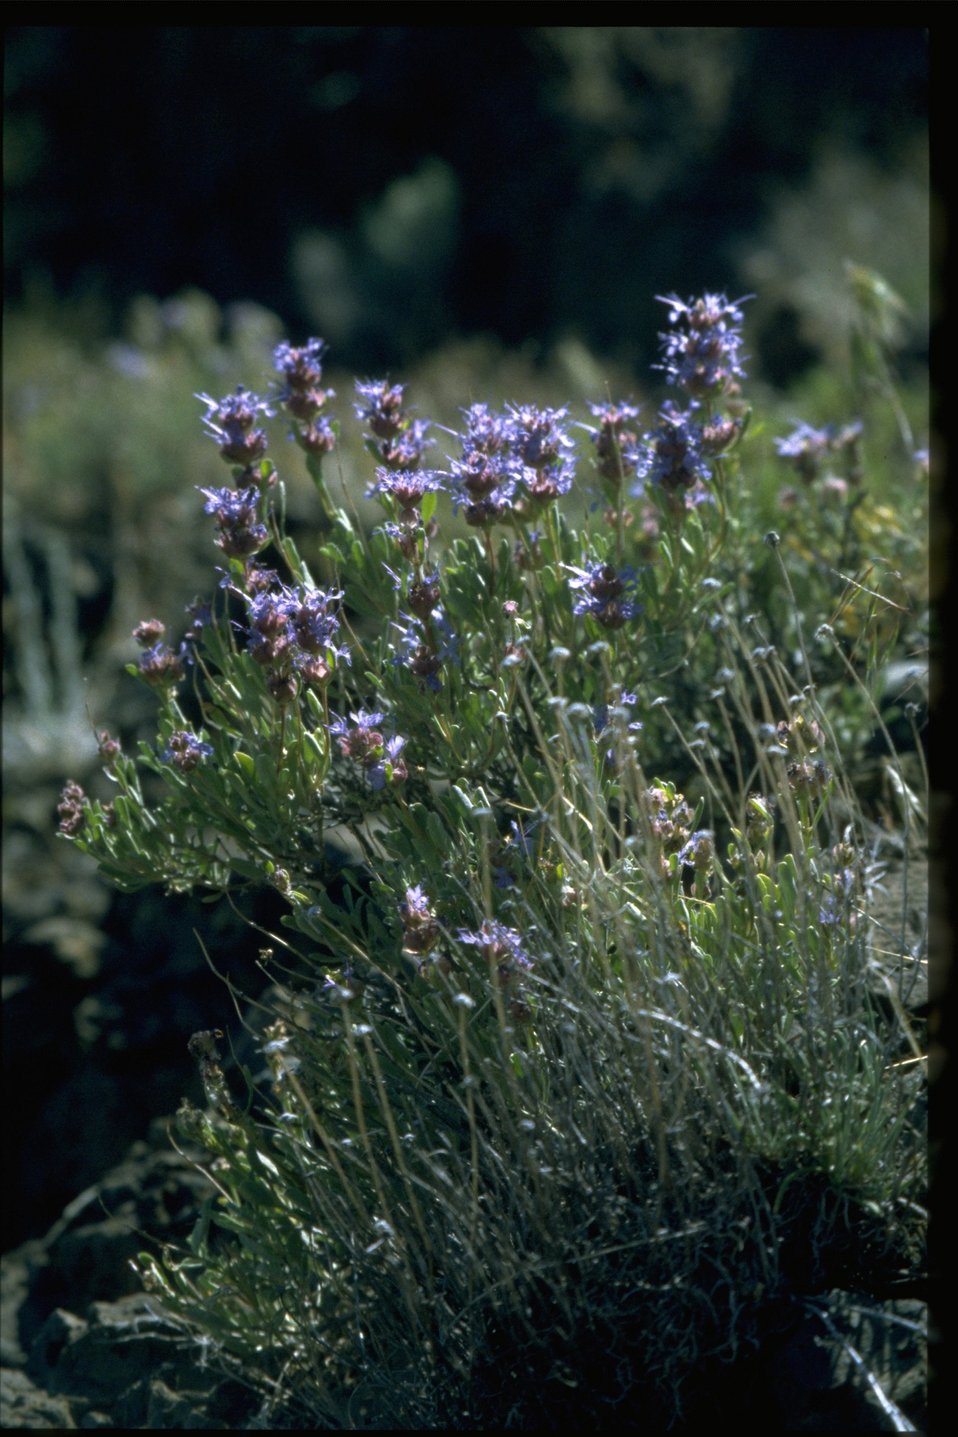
Medium shot of purple sage (Saliva dorrii).